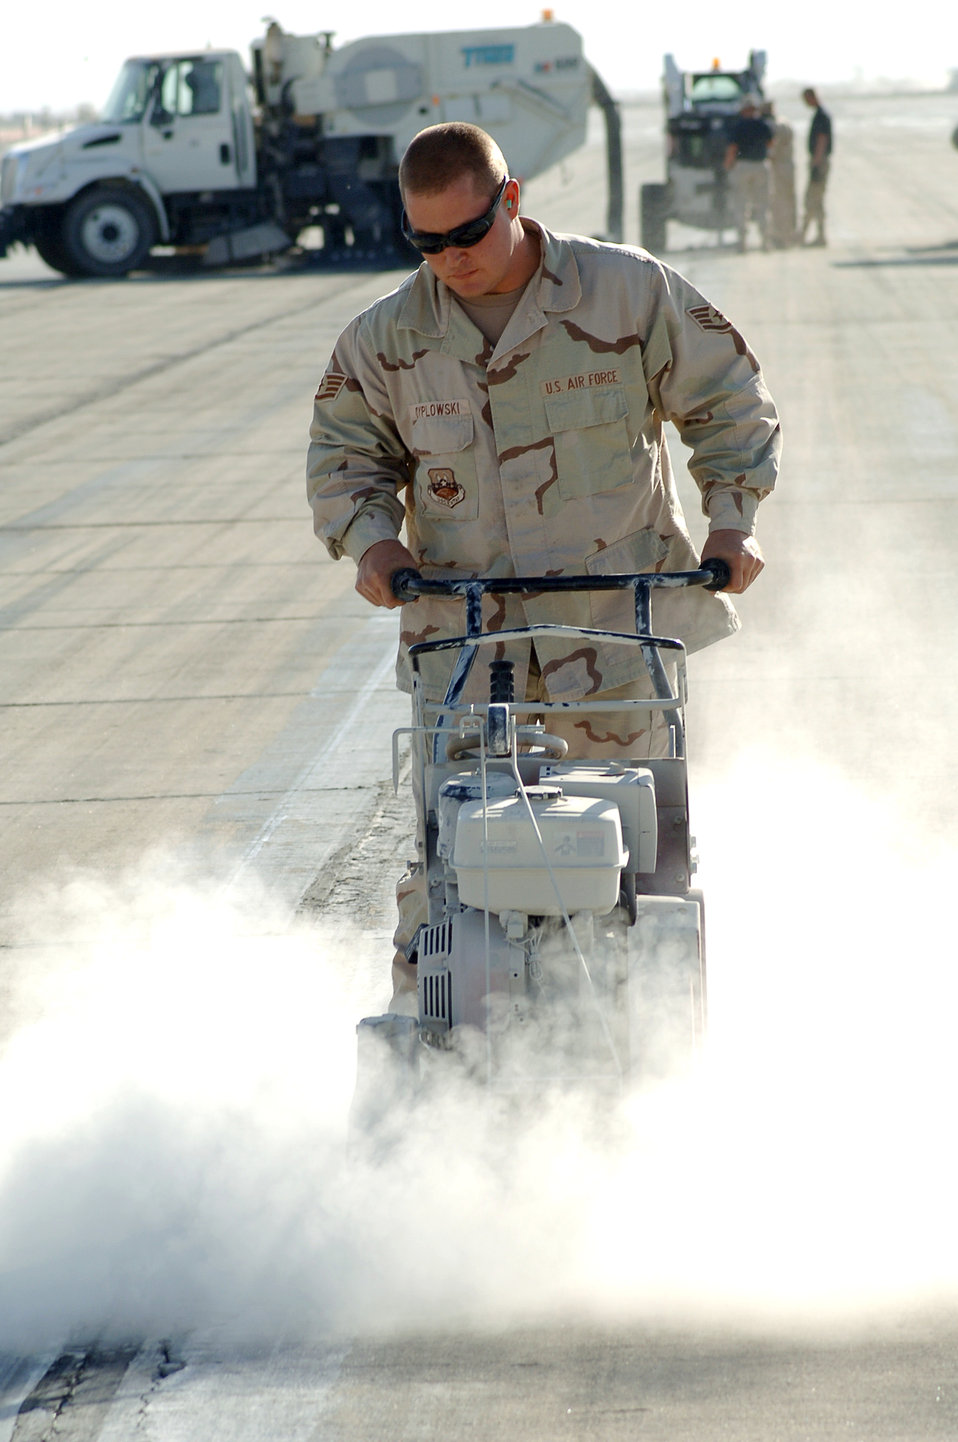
OEF

BAGRAM AIR BASE, Afghanistan (AFPN) -- Staff Sgt. Tony Dyplowski uses a concrete saw to repair the runway here. In the last two months, a nine-person spall repair team has made more than 200 repairs to sustain more than 3,000 operations each week in support of Operation Enduring Freedom. Sergeant Dyplowski, a 455th Expeditionary Civil Engineer Squadron pavements and equipment craftsman, deployed from Davis-Monthan Air Force Base, Ariz.